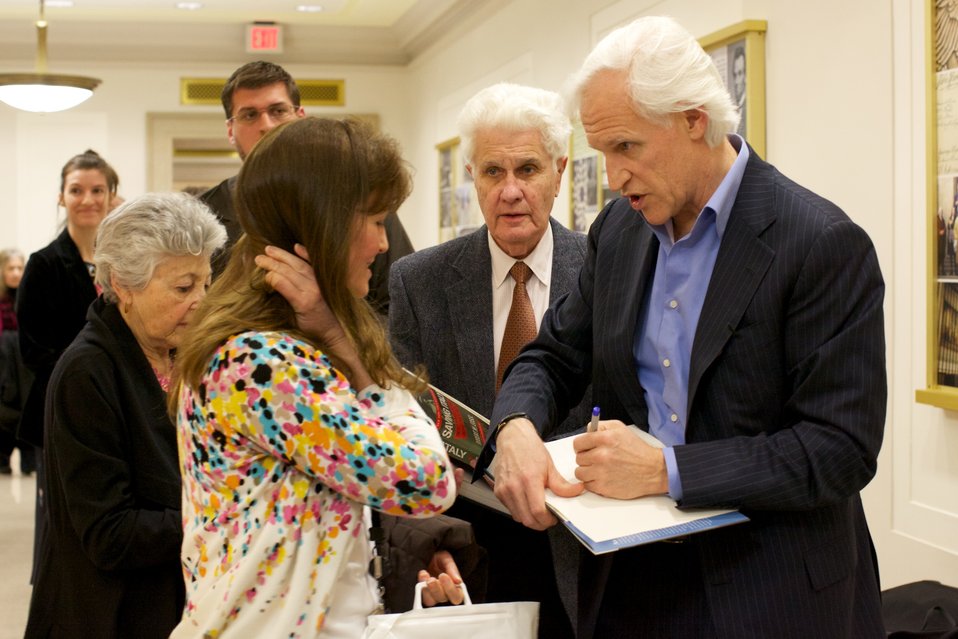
The Monuments Men; Robeert Edsel (right), greets and autographs books for lecture attendees